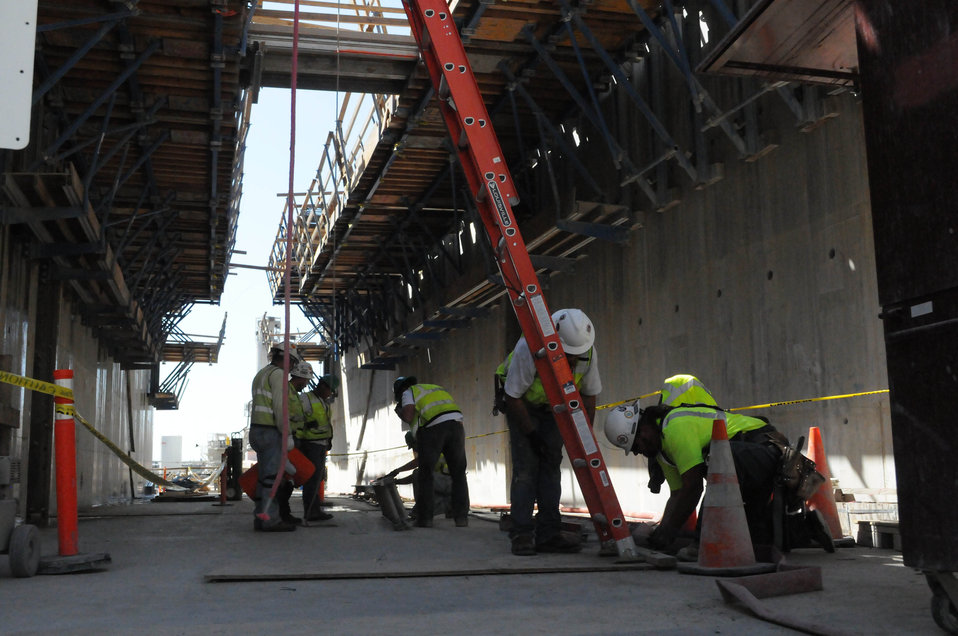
Folsom’s ‘second dam’ beginning to take shape

Construction crews work inside one of the bays of the Folsom Dam auxiliary spillway control structure April 24, 2013 in Folsom, Calif. The structure, essentially a second dam, will include a total of six bays that are each 34 ft. high and 23 ft. wide. The control structure, essentially a second dam, will work with the main dam to release water from the reservoir during large storms.